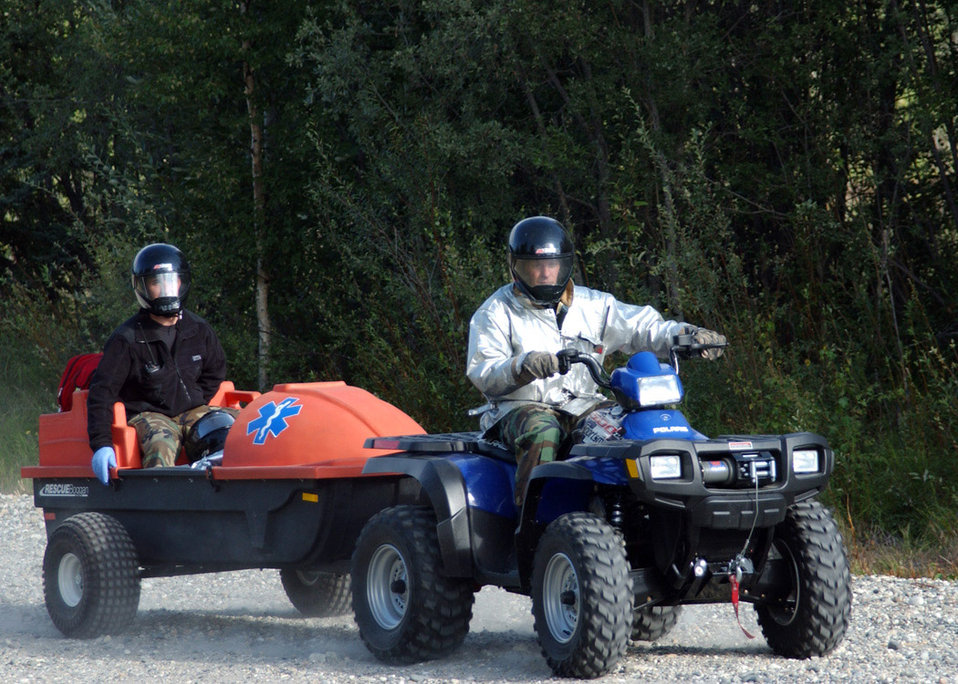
Quick care

EIELSON AIR FORCE BASE, Alaska -- Tech. Sgt. Walter Wright and an ambulance crewmember move a